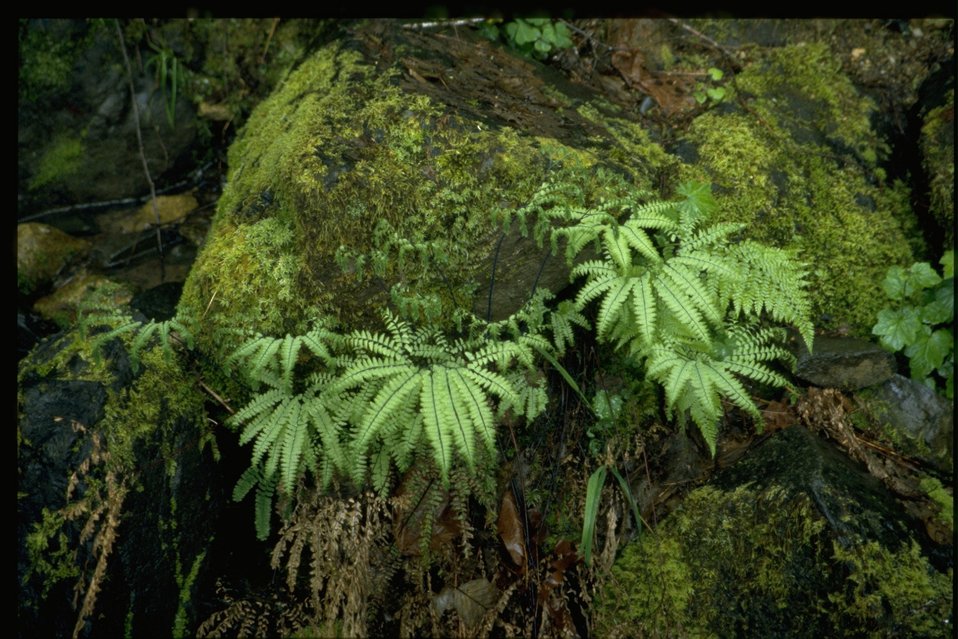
Medium shot of Adiantum aleuticum.